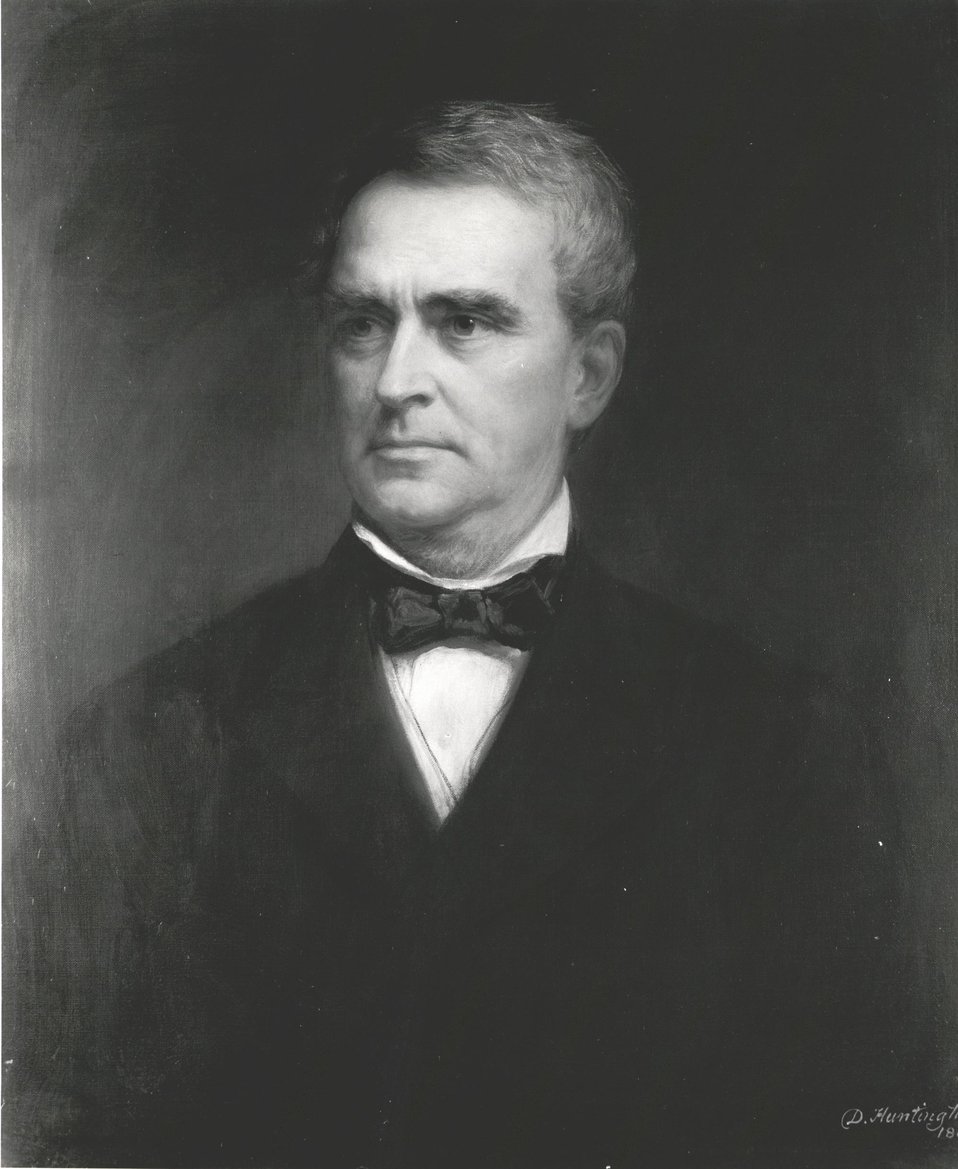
Frederick T. Frelinghuysen, U.S. Secretary of State, December 19, 1881 to March 6, 1885